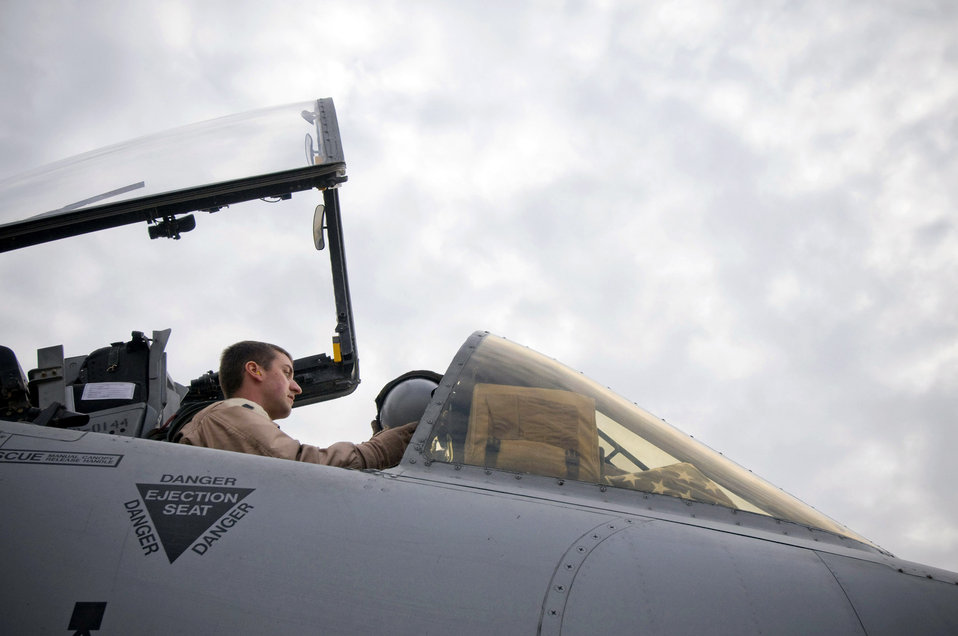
Thunderbolts active during the holidays

Capt. Eric Fleming prepares for takeoff in an A-10 Thunderbolt II Dec. 2 at Bagram Airfield, Afghanistan. Captain Fleming is the assistant wing weapons and tactics officer and an A-10 pilot. The large bubble-style canopy of the A-10 gives the pilot optimal visibility of the ground and surroundings during missions. He is deployed from Moody Air Force Base, Ga., and hails from Philadelphia.